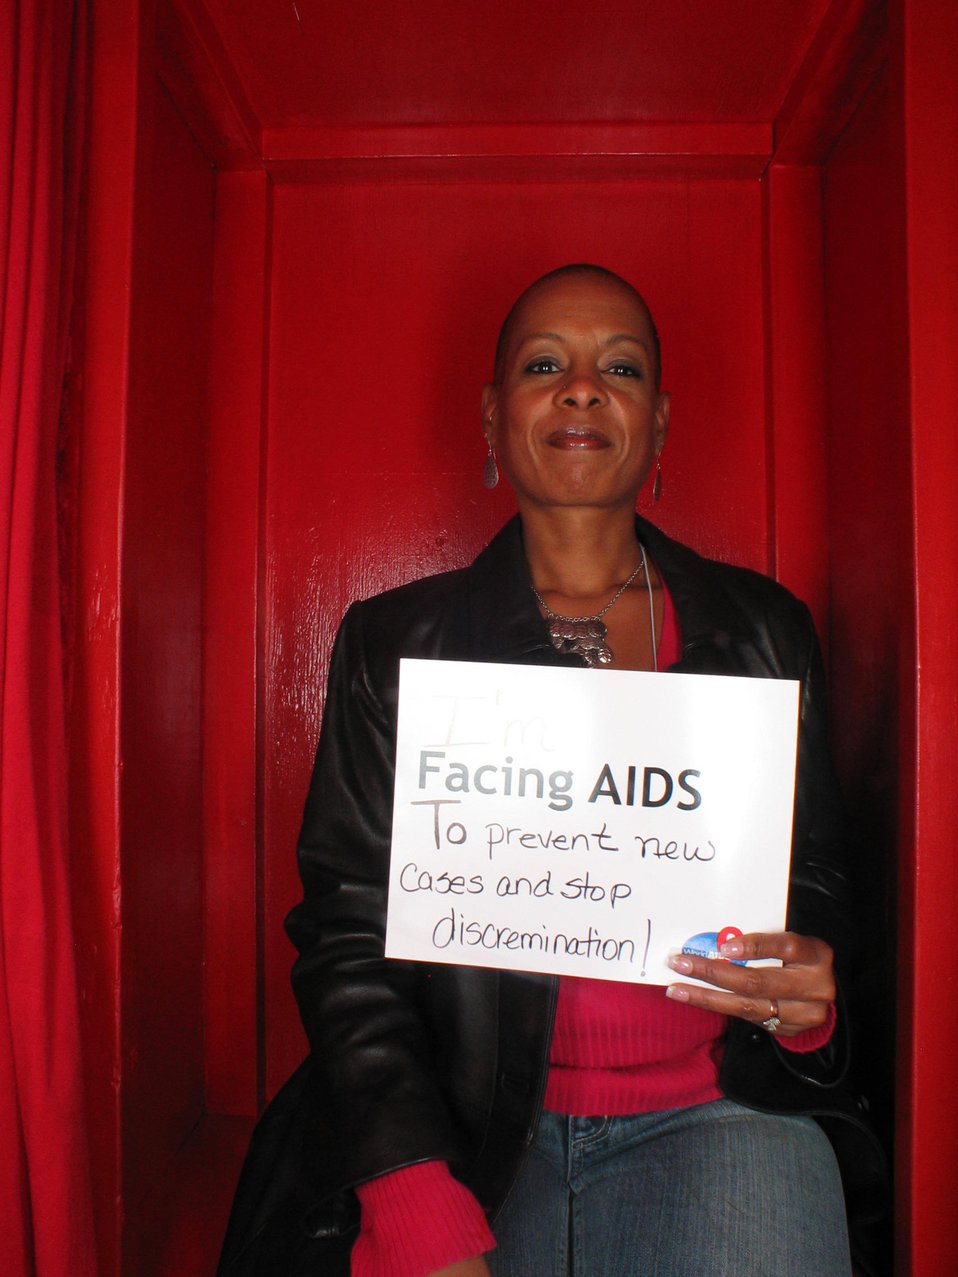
Facing AIDS to prevent new cases and stop discrimination